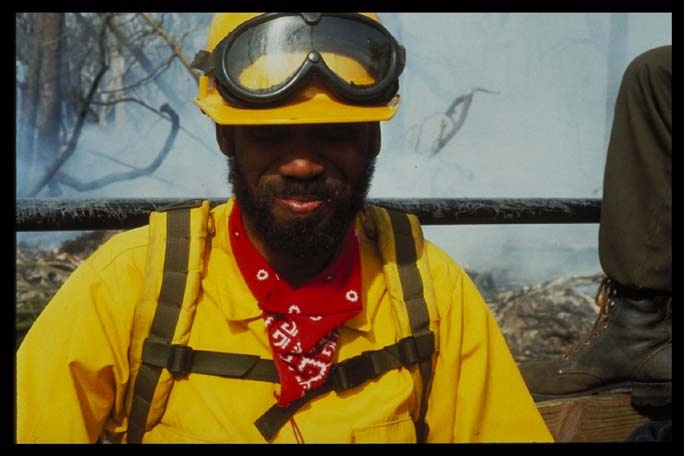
Wildland firefighter